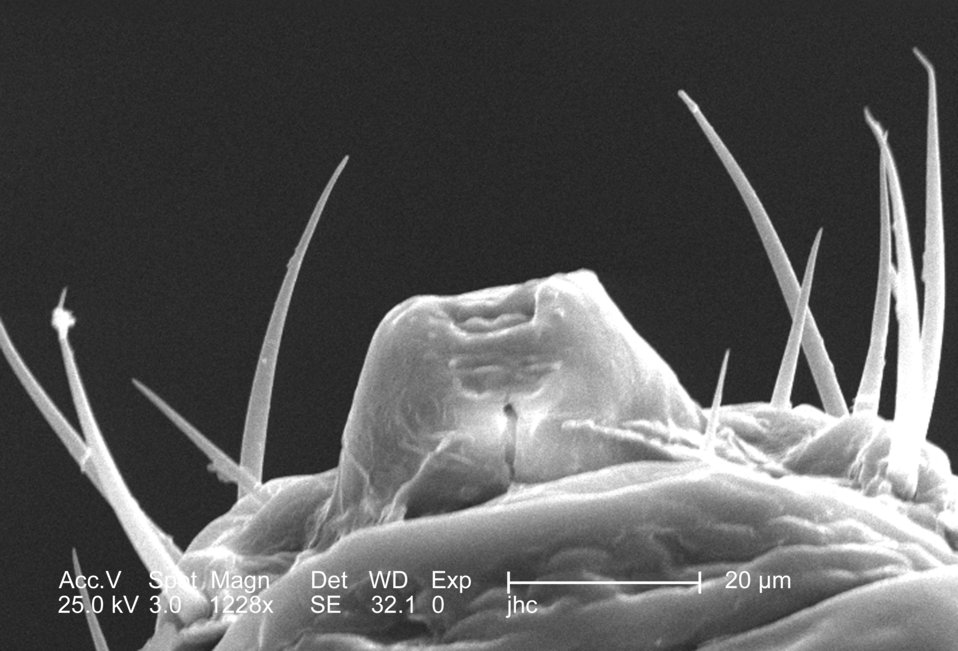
This was one of five scanning electron micrographic (SEM) images (PHIL# 9243 - 9247), successively magnified at higher and higher values, which focused on the head region of a female body louse, Pediculus humanus var. corporis from a ventral perspective. At a high magnification of 1228x, this SEM revealed some of the insect's exoskeletal morphology exhibited by the cephalic region. Highlighted in this view is the insect's cone-shaped mouth, which is surrounded by a number of 'setae', or sensorial hairs, which provide the organism with informational feedback about its environment such as chemistry and temperature.